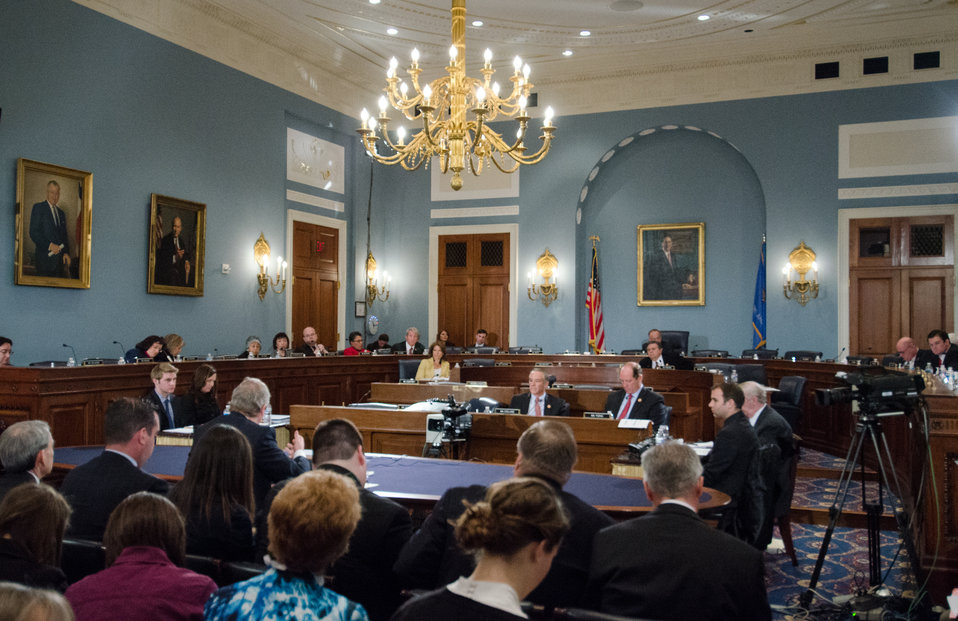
House Agriculture Committee members question Agriculture Secretary Tom Vilsack during testimony before the committee regarding the “State of the Rural Economy“ at the Longworth House Office Building in Washington, D.C. on Tuesday, Mar. 5, 2013.